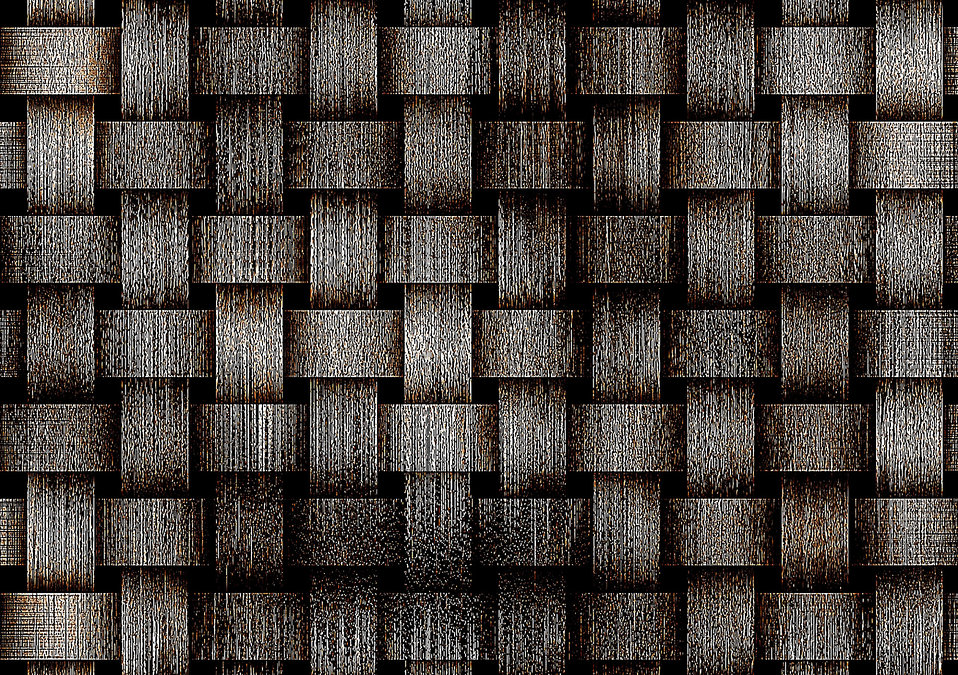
Old weaving pattern

Background.